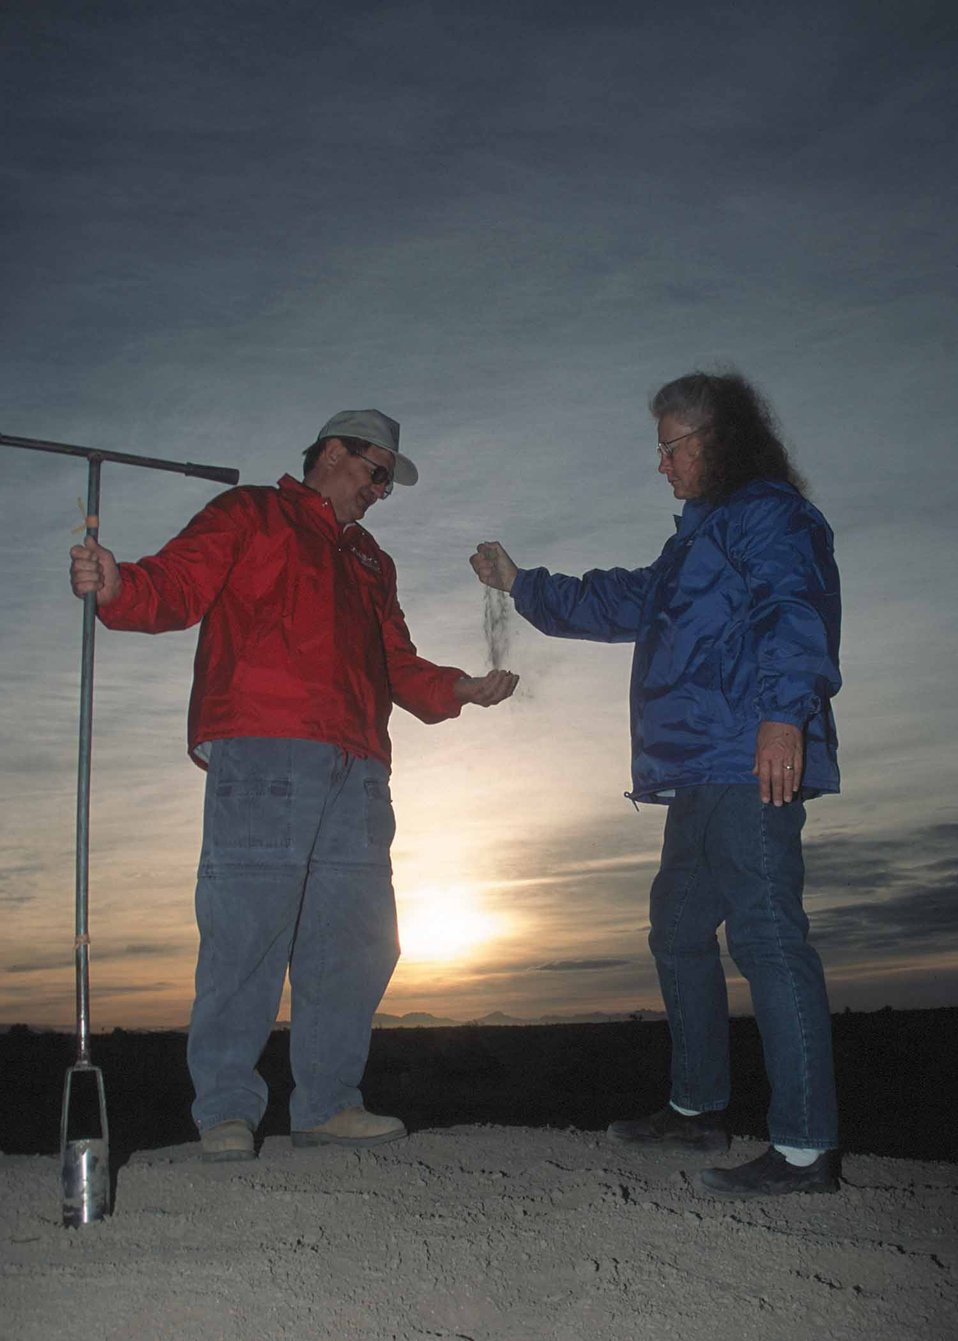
District Conservationist Bobbi McDerMott and technician Neal Hoy taking soil samples and checking soil moisture. Yuma, Az.